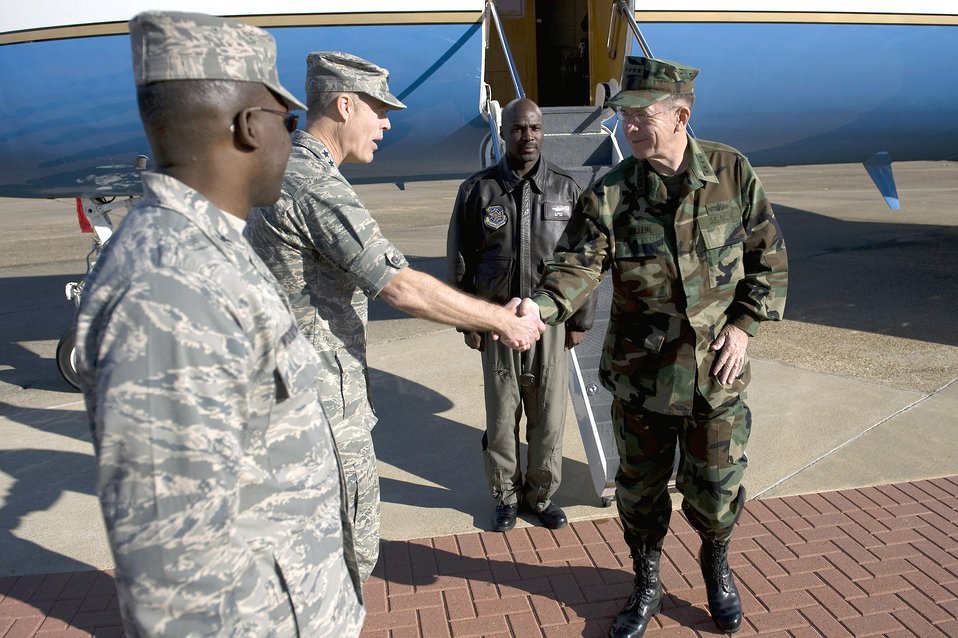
Joint Chiefs chairman highlights keys to defense

Lt. Gen. Allen G. Peck and Col. Tyrone Woodyard greet Navy Adm. Michael G. Mullen upon his arrival Oct. 28 at Maxwell Air Force Base, Ala. Admiral Mullen is visiting the base to speak to students assigned to the Air Command and Staff College and the Air War College. Admiral Mullen is the chairman of the Joint Chiefs of Staff. General Peck is Air University commander, and Colonel Woodyard is 42nd Air Base Wing vice commander.